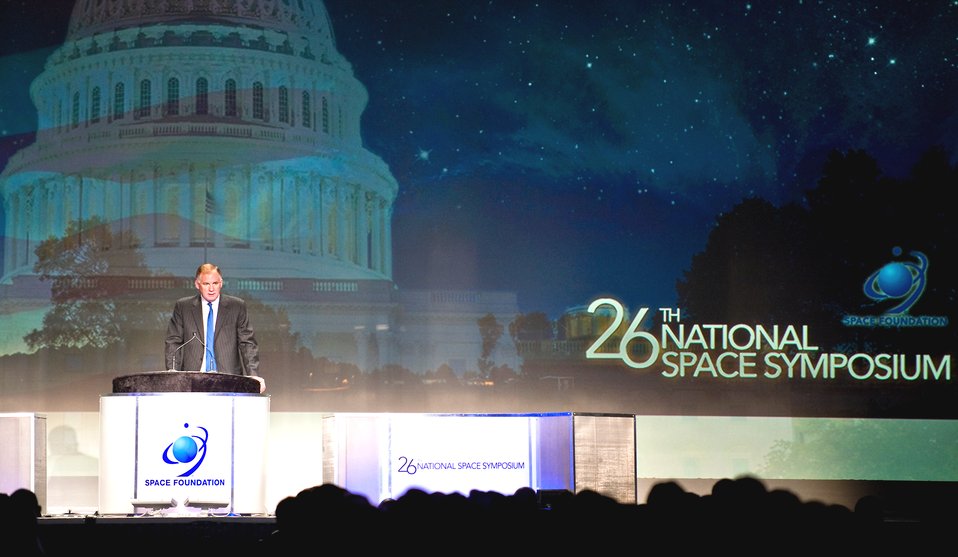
DOD Space Strategy

Deputy Defense Secretary William J. Lynn III speaks at the 2010 National Space Symposium in Colorado Springs, Colo., April 14, 2010.